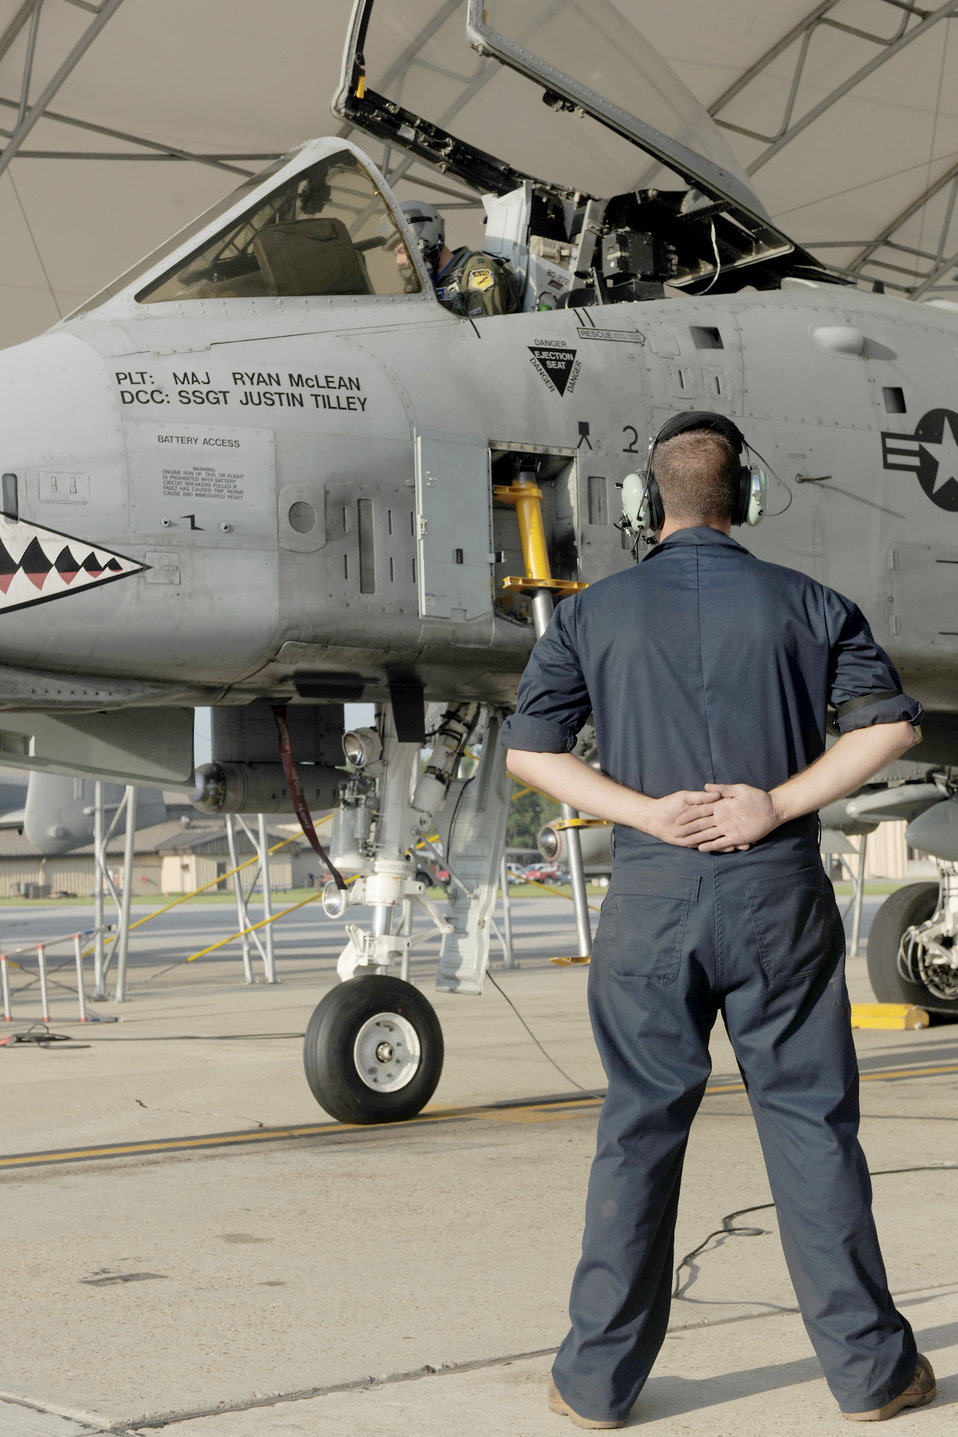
Enhanced Mojave Viper Exercise

Staff Sgt. David Clifford waits as a pilot completes the preflight checklist Aug. 13, 2010, at Moody Air Force Base, Ga. Sergeant Clifford is an A-10 Thunderbolt II demonstration team crew chief with the Air Combat Command - East Coast team.